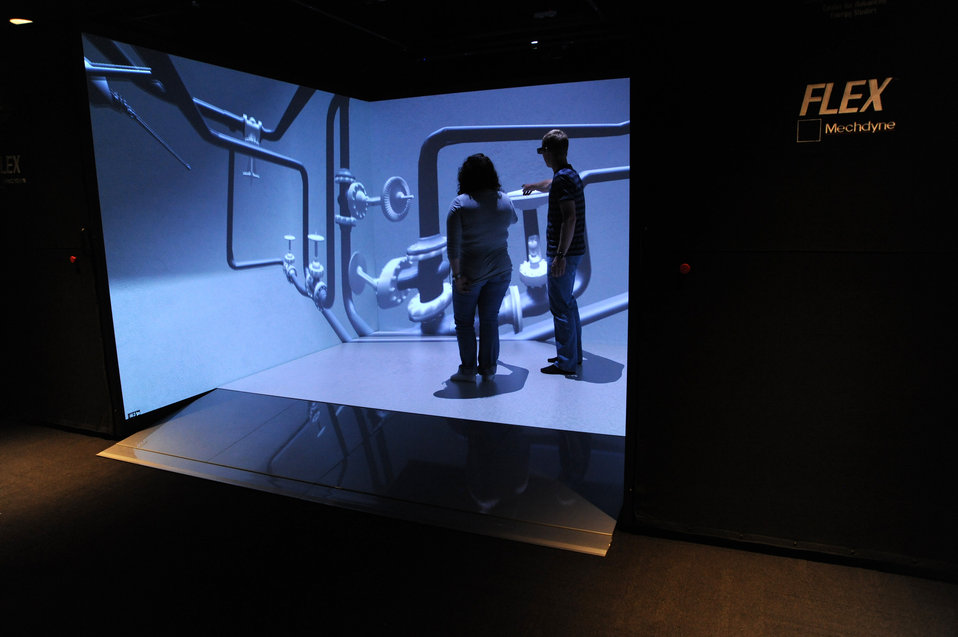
Engineering teams can use the Computer Assisted Virtual Environment (CAVE) at INL Center for Advanced Energy Studies to tour a virtual nuclear reactor, train staff, orient subcontractors and consider new designs.